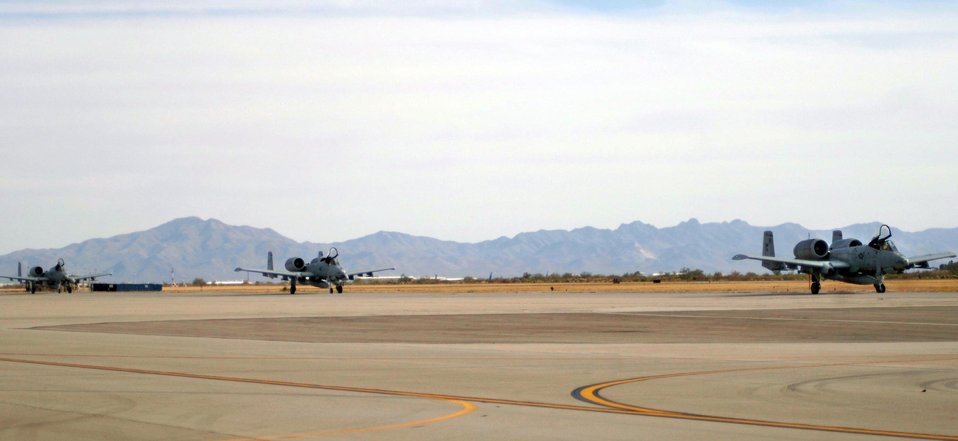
Home again

DAVIS-MONTHAN AIR FORCE BASE, Ariz. (AFPN) -- A-10 Thunderbolt IIs taxi down the runway here Feb. 8. The A-10s, with the 354th Fighter Squadron, were deployed to Bagram Air Base, Afghanistan, in support of Operation Enduring Freedom.